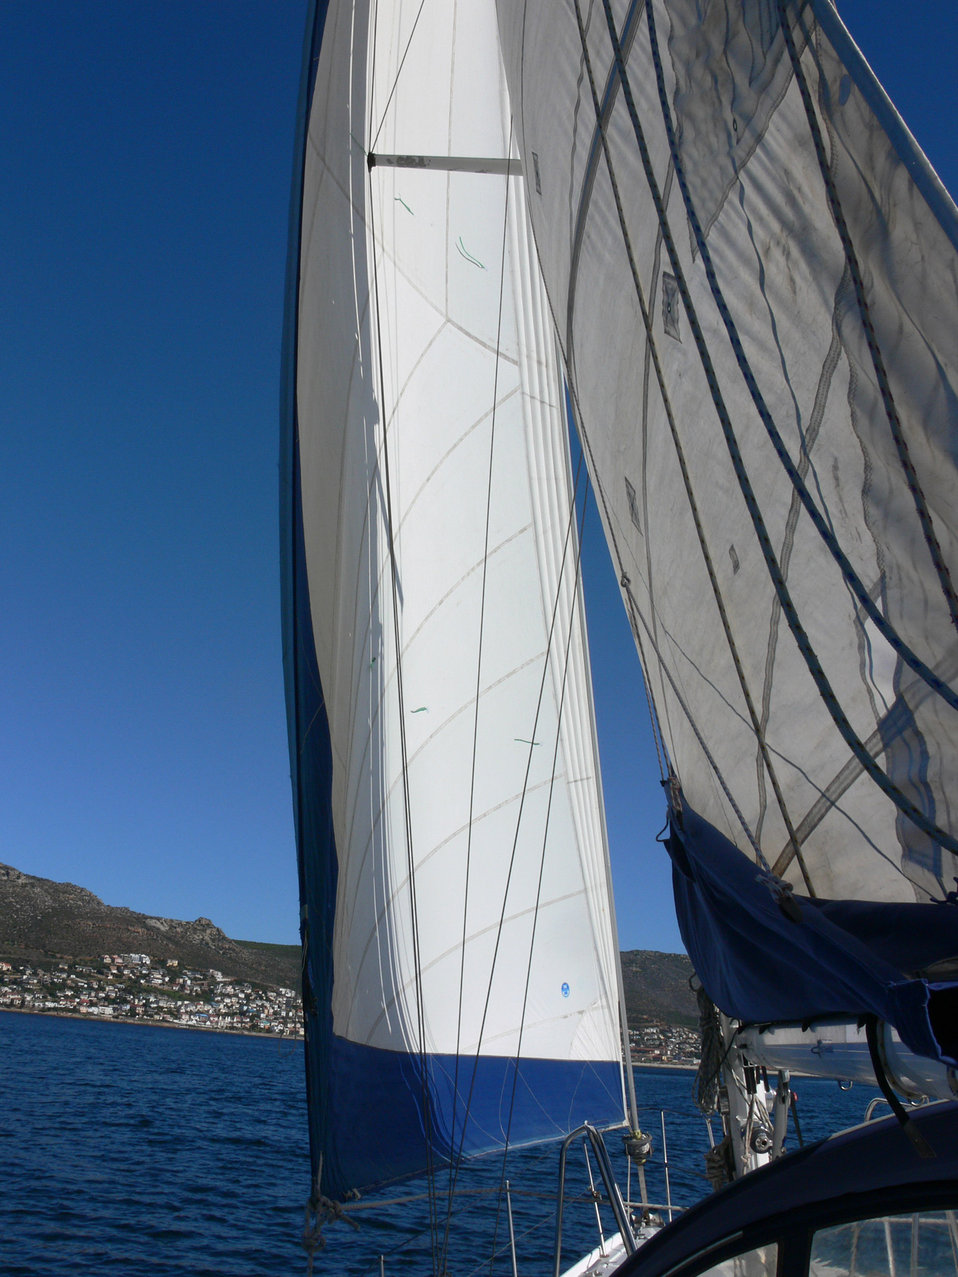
Behind the sails

View from deck of sailing boat.